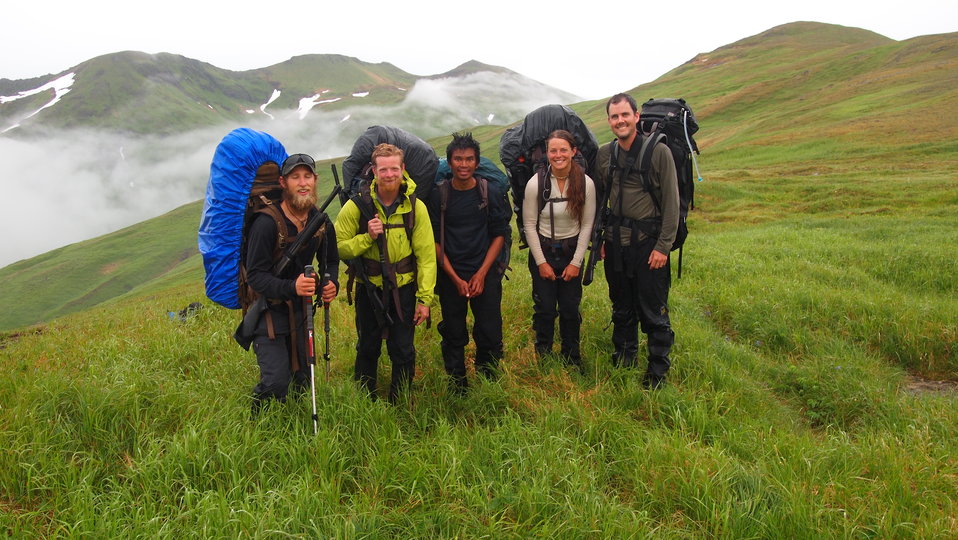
2012 Mountain goat research crew

Photo Credit: USFWS
Source: Kodiak NWR